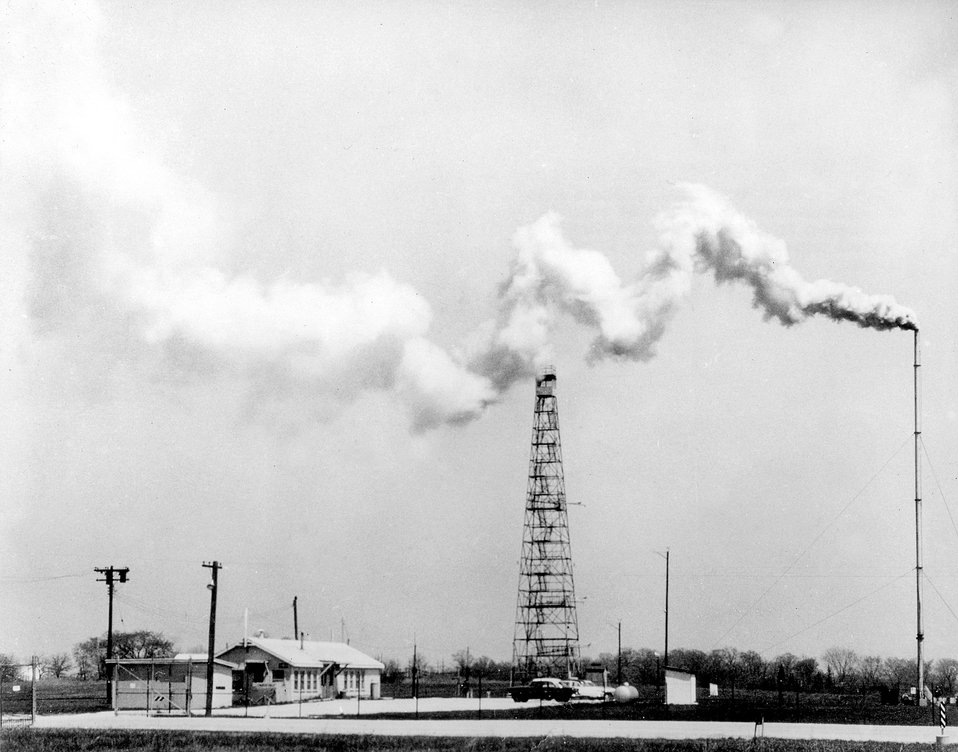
A smoke plume effected from an 111-foot stack at Argonne indicating unstable atmospheric conditions.
c.1968